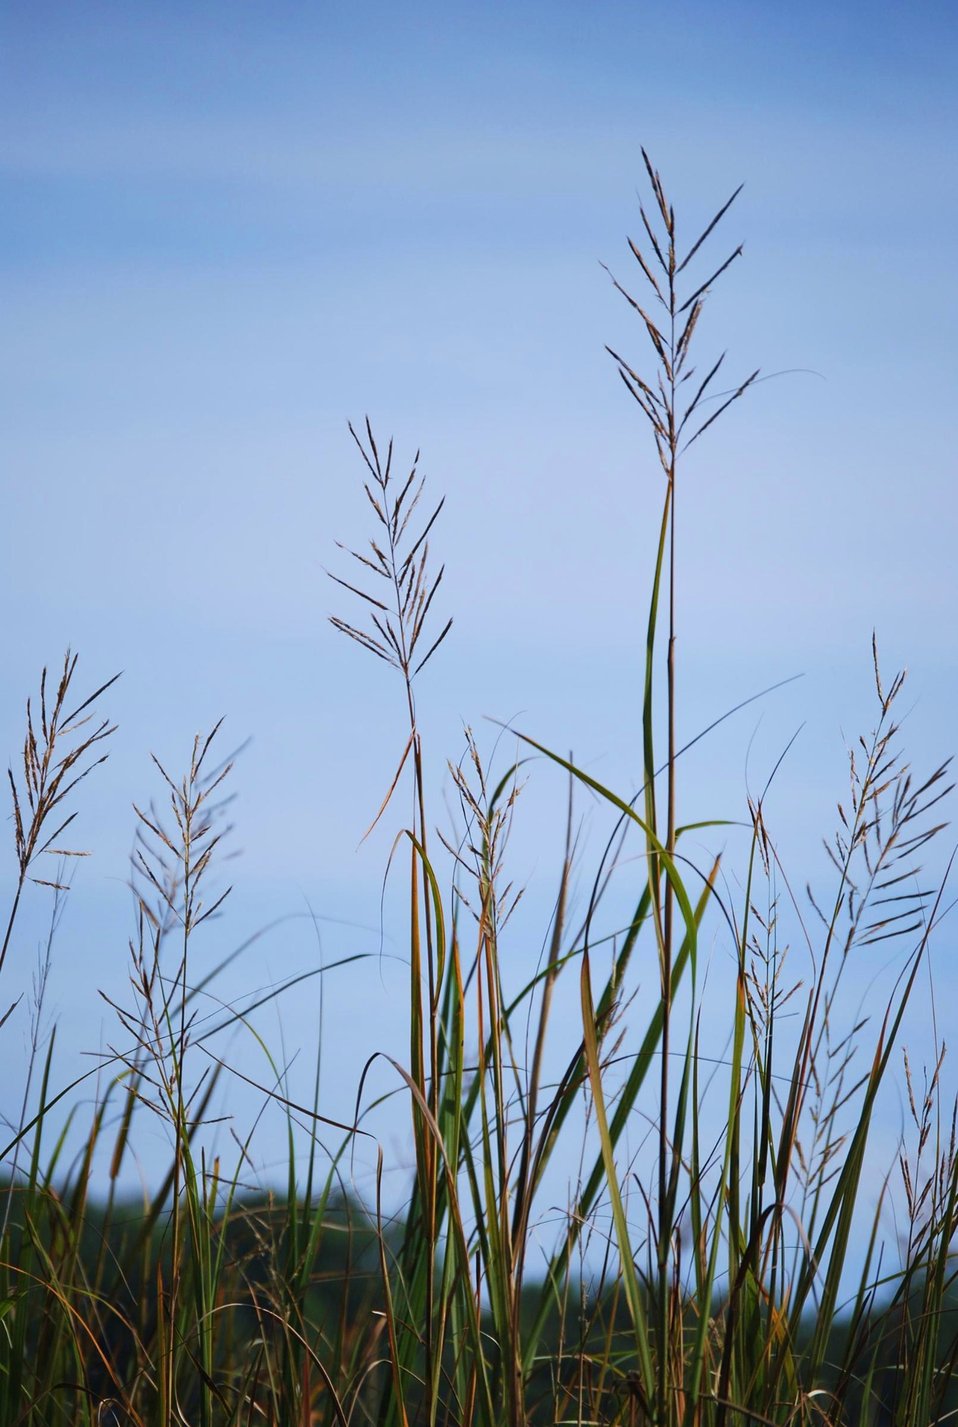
Wild rice on Parkers Creek.